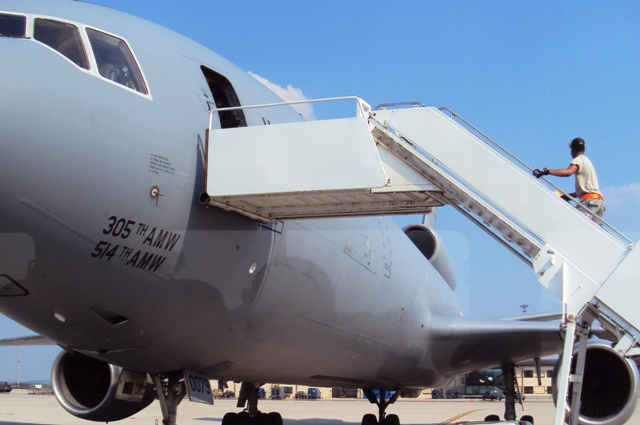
Aerial porters keep the mission moving in Southwest Asia

An aerial porter climbs the stairs into a KC-10 Extender during operations June 24, 2010 at Spangdahlem Air Base, Germany. The aerial porter is assigned to the Air Mobility Command terminal at Spangdahlem AB,